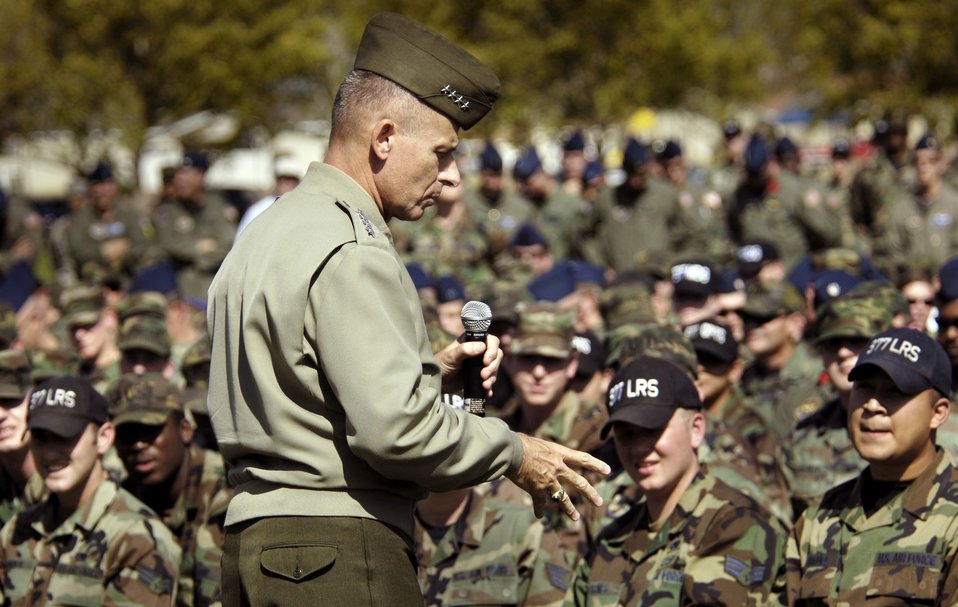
Town Hall meeting

Marine Gen. Peter Pace, chairman of the Joint Chiefs of Staff, speaks to Airmen at Kirtland Air Force Base, N.M, Oct. 4.